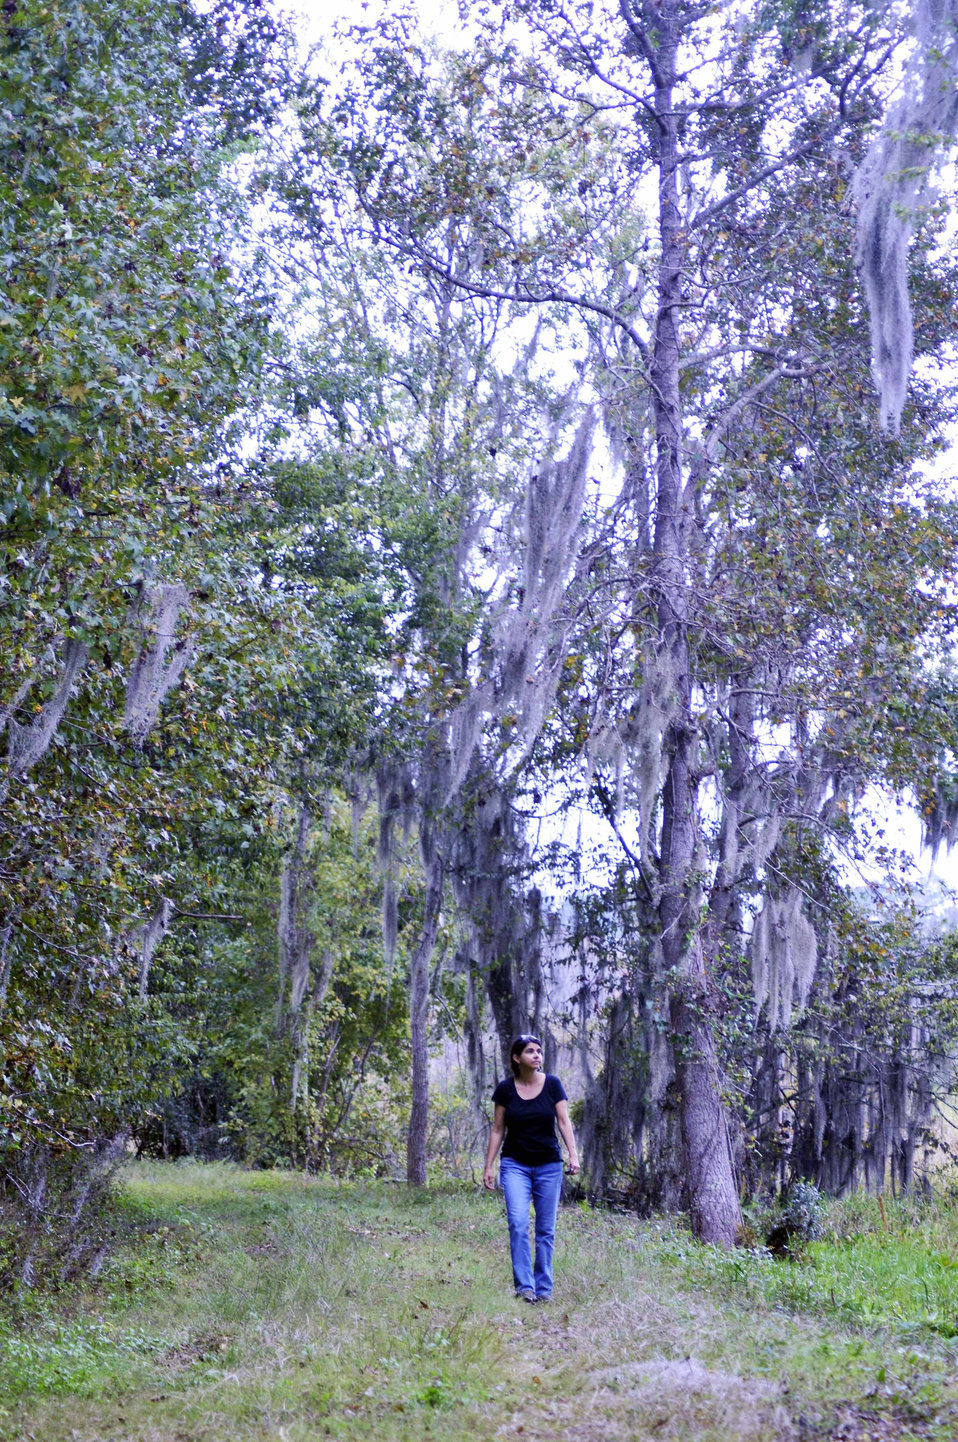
Levy Prairie 2

Kelly McPherson walks along the Spanish moss draped trail in the Levy Prairie wetland basin near Gainesville, FL. This wetland basin is home bobcat, wood duck, muskrat, bald eagle, sandhill crane and other wildlife species. This public land features six and a half miles of trails, which weave through Florida’s unique wetland landscape. In the late 1960s, ranchers built levees around the area, dug canals and continually kept it drained for pastures to raise cattle. In 2001, the U.S. Department of Agriculture’s (USDA) Natural Resources Conservation Service (NRCS) worked with a local rancher return the land to its natural state. The landowner enrolled the land into a conservation easement through the former Wetlands Reserve Program, which provides financial assistance for farmers, ranchers and forest landowners who transform working lands into wetlands. The 2014 Farm Bill merged this program with two other easement programs, forming the Agricultural Conservation Easements Program.